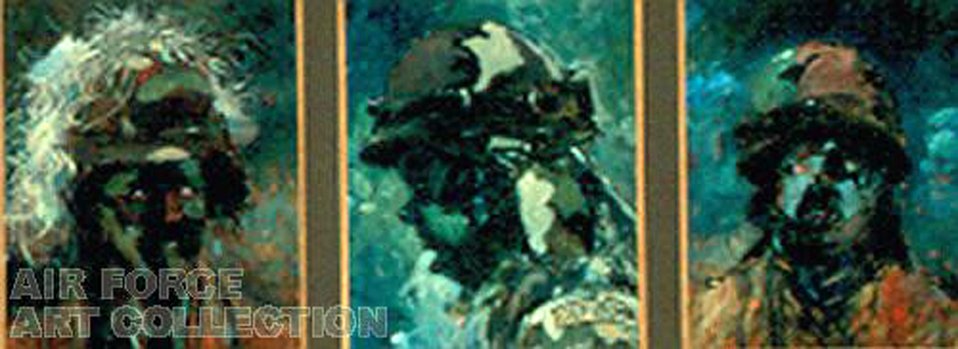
Expeditionary center's Air Force art collection inspires Airmen

This painting by artist James Consor, entitled